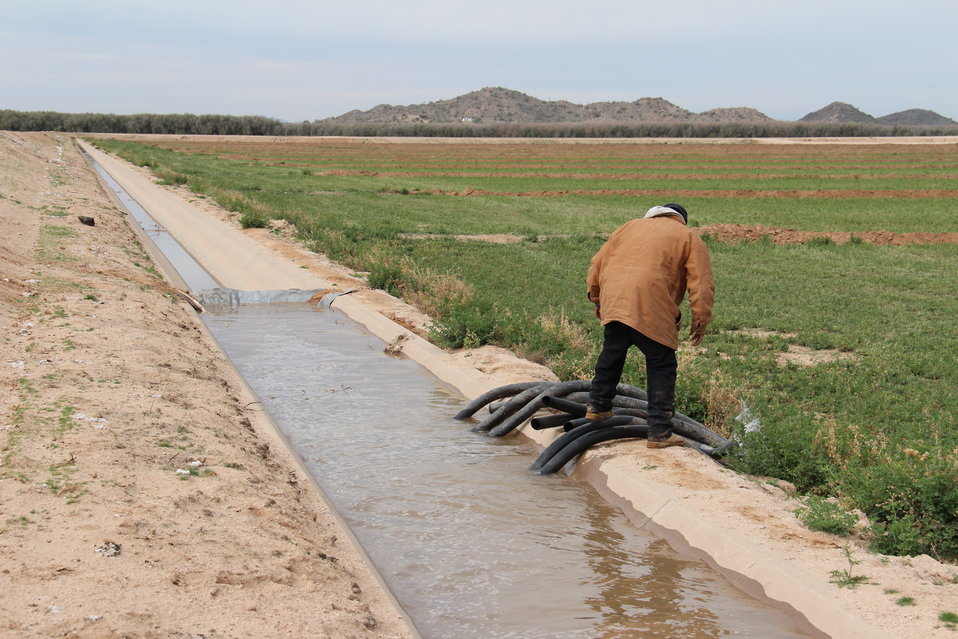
StrikeForce1

Gila River Indian Community member irrigates a field from a concrete-lined irrigation ditch.